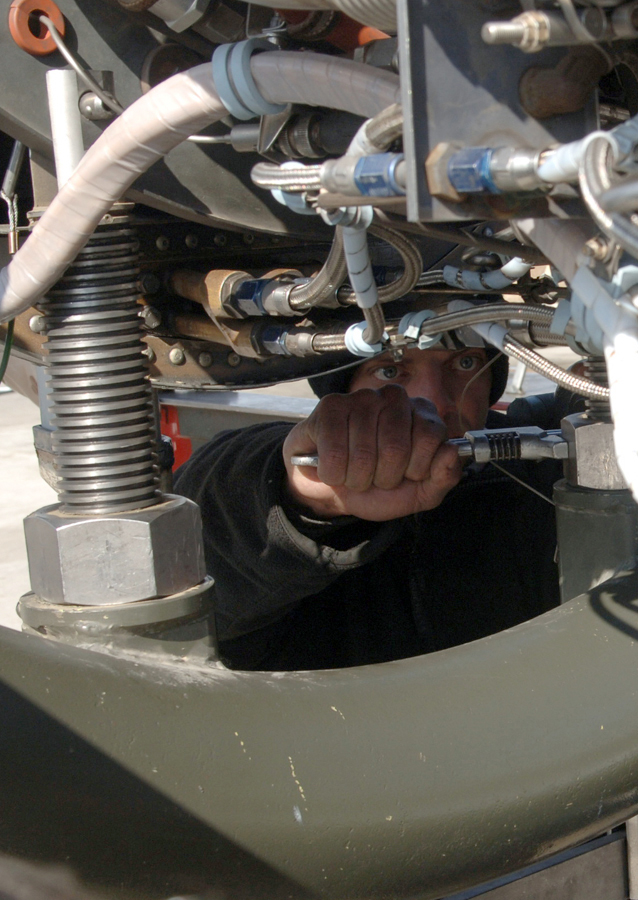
Engine check

BAGRAM AIR BASE, Afghanistan (AFPN) -- Senior Airman Justin Mills makes adjustments with a wrench while preparing to replace an engine from an A-10 Thunderbolt II. Airman Mills is an aerospace propulsion journeyman assigned to the 455th Expeditionary Aircraft Maintenance Squadron.